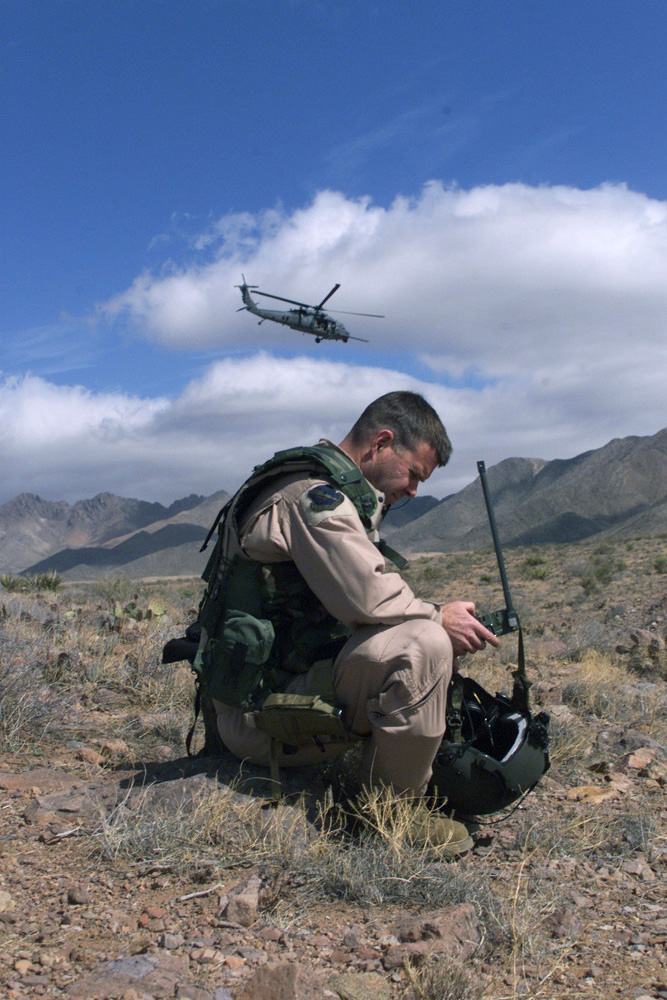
'Quiet Professionals' praised by Air Force's top special operator

FORT BLISS, Texas -- An HH-60 Pave Hawk from the 55th Rescue Squadron circles overhead searching for a